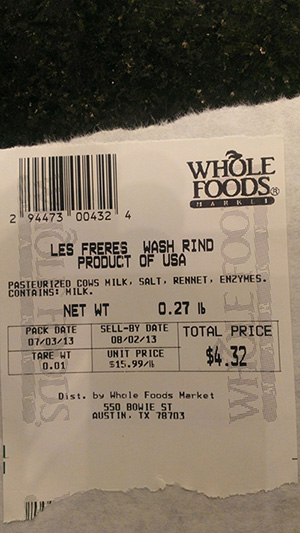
RECALLED – Cheese

July 5, 2013 – Product Recall – Whole Foods Market recalls cheese because of possible health risk.